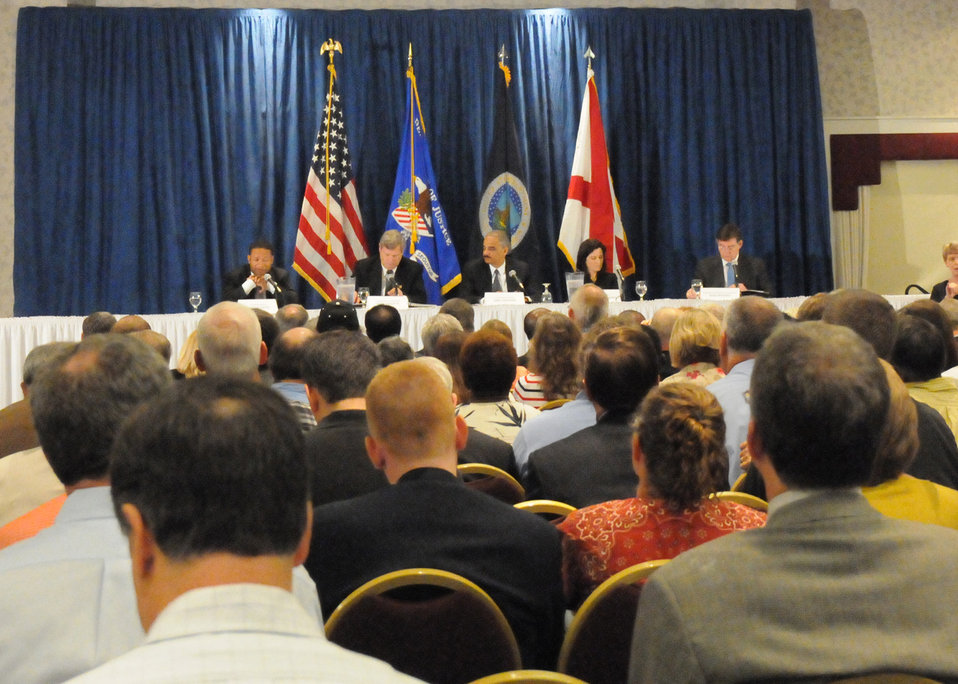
U. S. Department of Justice and the U.S. Department of Agriculture hold a listening session on “Agriculture and Antitrust Enforcement Issues in Our 21st Century Economy “ with poultry farmers at Alabama A & M University in Normal, AL, on Friday, May 21, 2010. The late morning listening was attended by L to R Alabama (D 7th District) Congressman Artur Davis, Agriculture Secretary Tom Vilsack, Attorney General Eric Holder, Assistant Attorney General for Antitrust Christine Varney, and Alabama State Agricultural Commissioner Ron Sparks. USDA photo 10di1361-117.